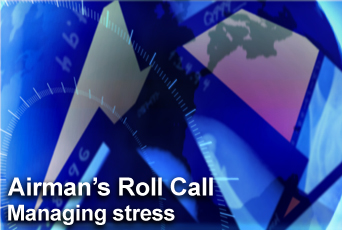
Airman's Roll Call: Managing stress during the holidays

This week's Airman's Roll Call focuses on Airmen identifying and finding ways to deal with stress during the holidays.